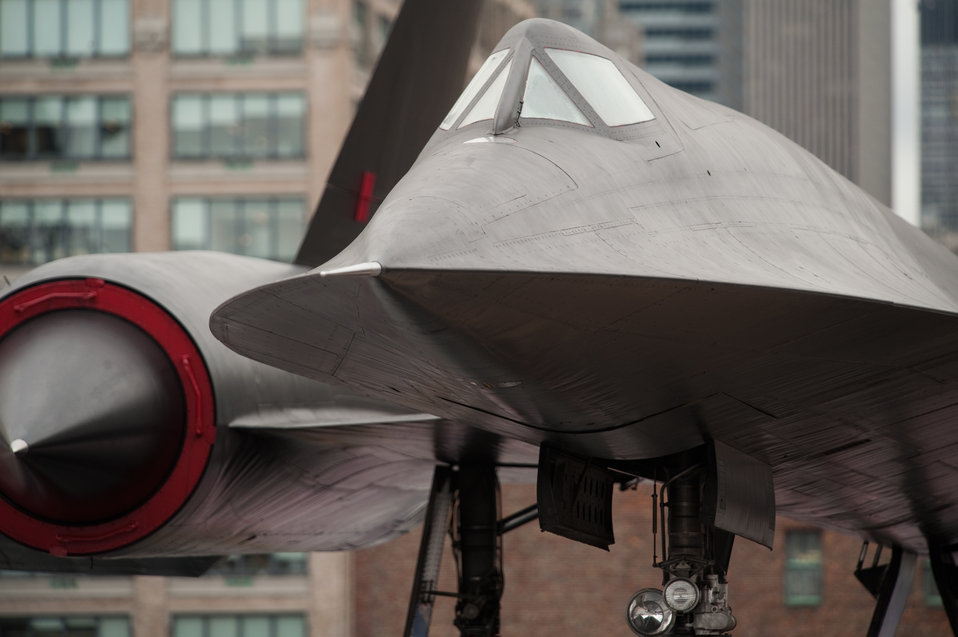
Air Force Week New York City Proclamation Ceremony

At the Air Force Week New York City proclamation ceremony, an A-12 reconnaissance aircraft, the predecessor to the Air Force's SR-71, is on display on the USS Intrepid Sea, Air and Space Museum Aug. 24, 2010.